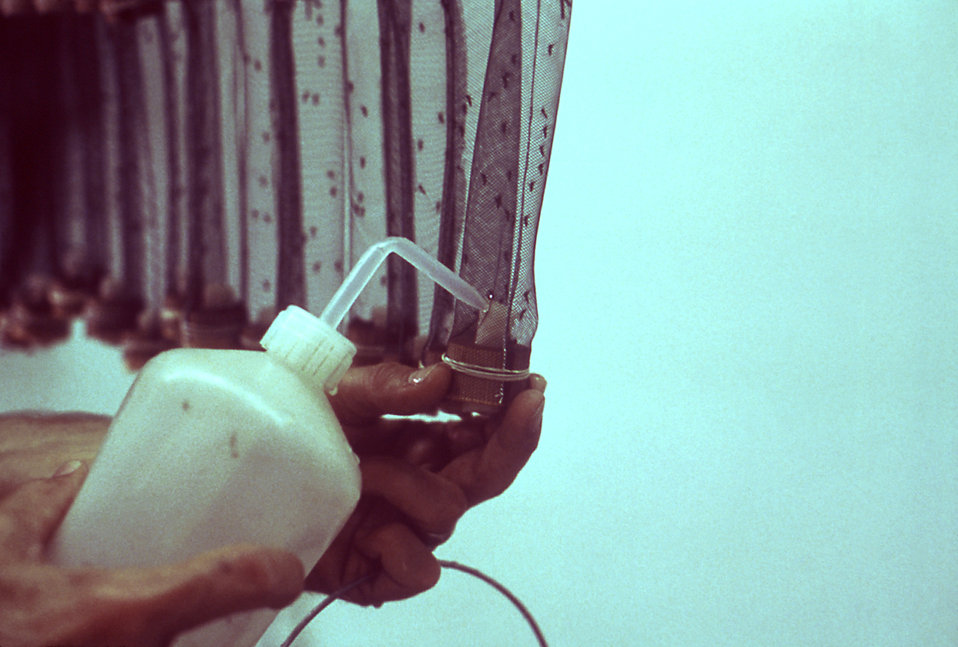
This 1981 photograph depicted an arboviral researcher as he added a sucrose and water formula to each of these 'mini' bioassay cages as a nutrient mixture for the mosquitoes contained therein, which were acquired in a field test.